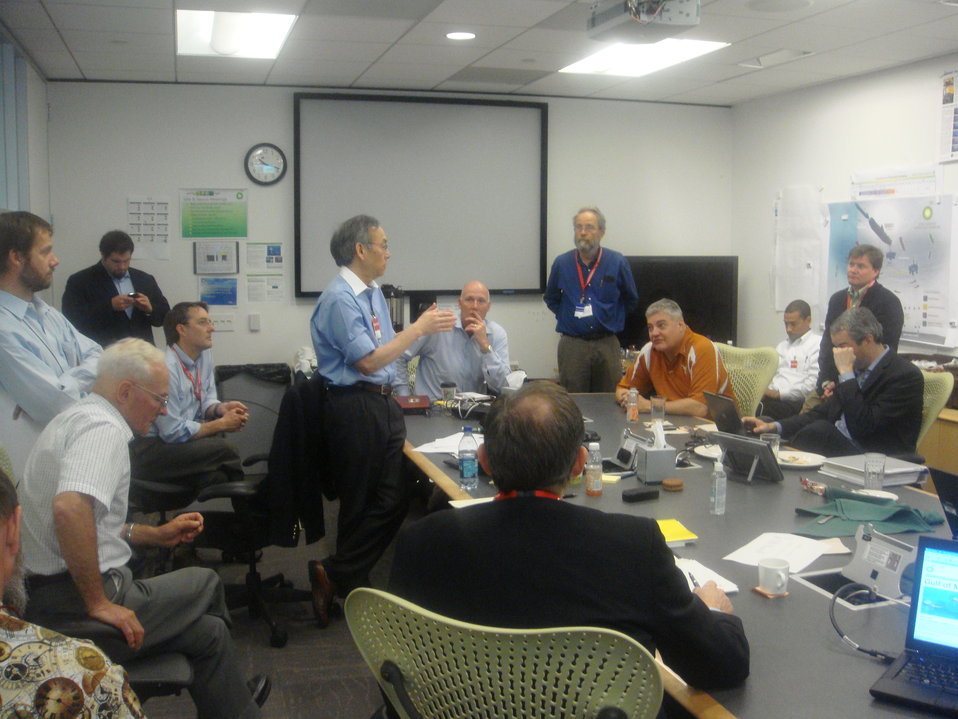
U.S. Energy Secretary Steven Chu confers with scientific experts and BP officials on the 'top kill' strategy